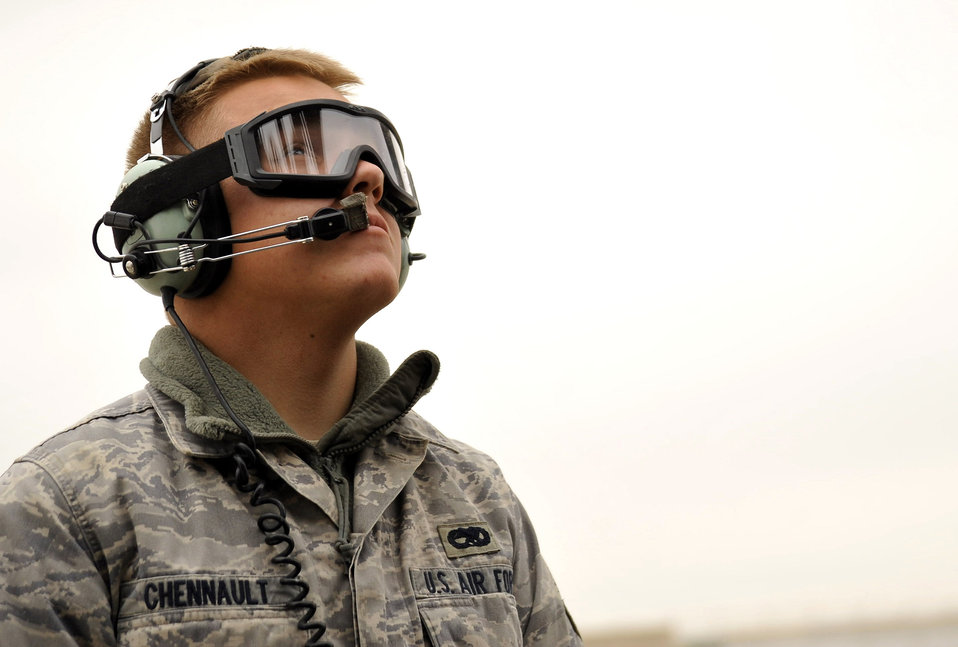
Squadron highlights capabilities during Afghan rescue mission

Airman 1st Class William Chennault looks at the main rotor blades of an HH-60G Pave Hawk Dec. 8, 2009 at Camp Bastion, Afghanistan. This inspection ensures the HH-60G did not receive any damage while picking up a patient. Airman Chennault is a 451st Air Expeditionary Squadron crew chief.